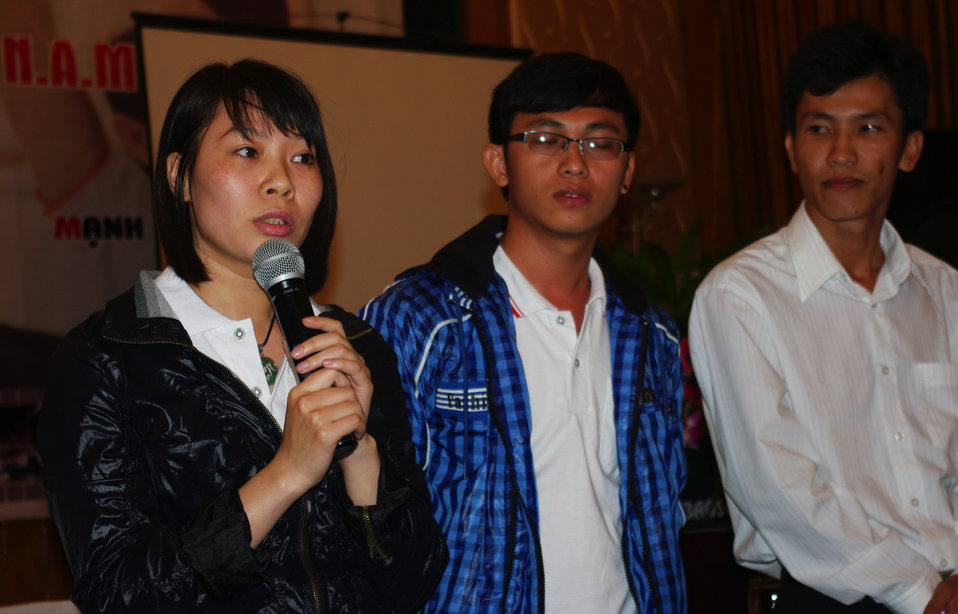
USAID Supports HIV Awareness among Street Youth and Young Men

Trainers and peer educators tell their stories on November 29, 2011, in Hanoi, Vietnam